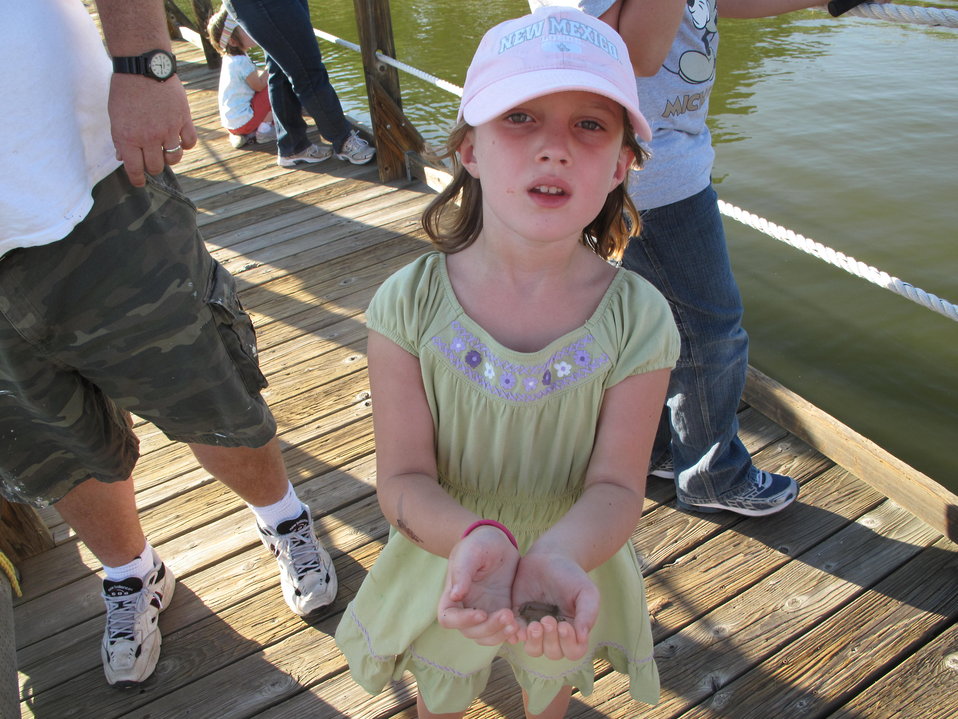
Fishing at Rocky Mountain Arsenal